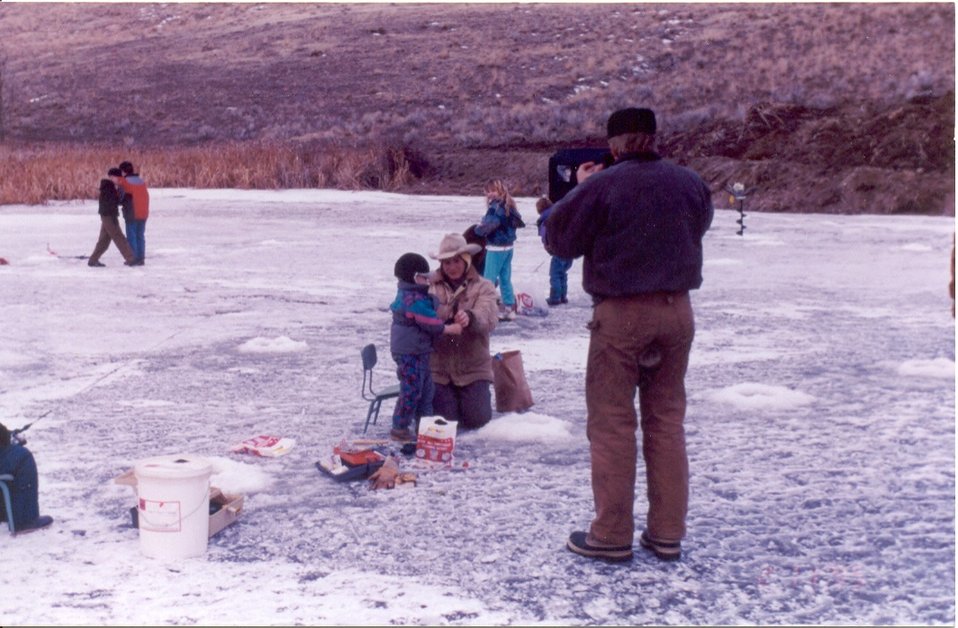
Ice Fishing Derby Salmon Idaho Salmon Field Office UCSC Upper Columbia Salmon Clearwater District